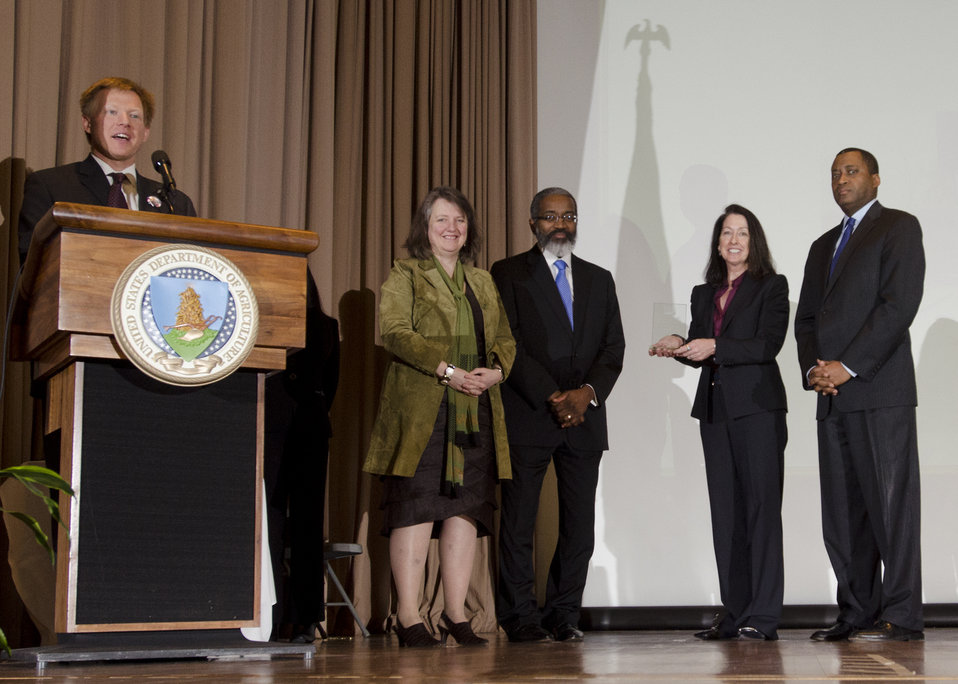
U.S. Department of Agriculture (USDA) Forest Service Hawaii Experimental Tropical Forest (HETF) Administrator from Hilo, HI Tabetha Block receives the Dr. Martin Luther King, Jr. National Service Day Drum Major Service Award (accepting the award in her absence is Forest Service Associate Chief Mary Wagner, second from right) at the Jefferson Auditorium in Washington, D.C. on Tuesday, Jan. 15, 2013. (L to R, Agriculture Director Faith Based and Neighborhood Partnerships Max Finberg (at podium), Agriculture Deputy Secretary Kathleen Merrigan, USDA Acting Assistant Secretary for Administration Dr. Gregory Parham, Forest Service Associate Chief Mary Wagner, and Agriculture Assistant Secretary for Civil Rights Dr. Joe Leonard).